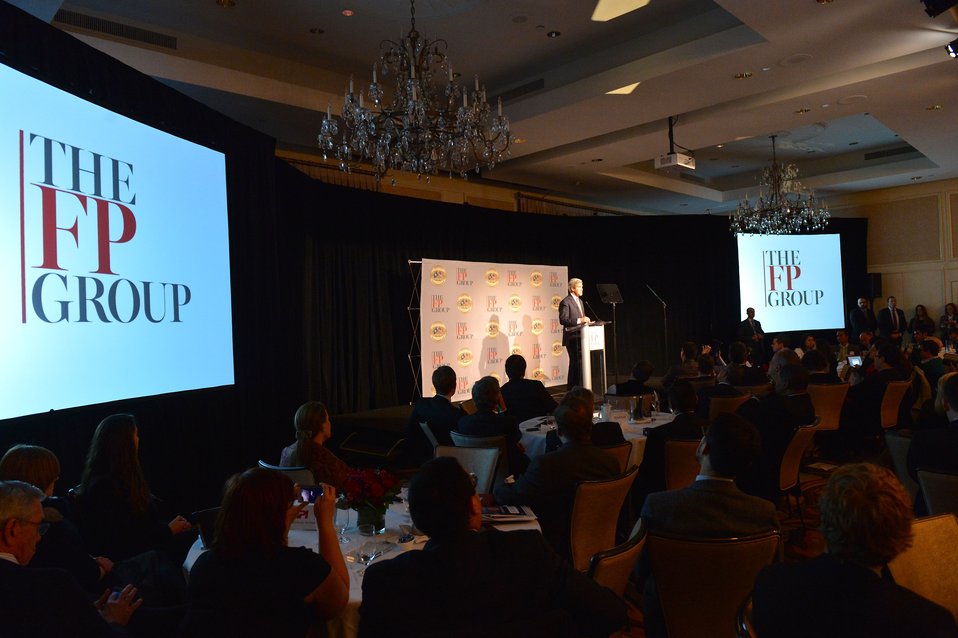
Secretary Kerry Delivers Remarks at the Transformational Trends Strategic Forum

U.S. Secretary of State John Kerry delivers remarks at the Transformational Trends Strategic Forum in Washington, D.C., on December 11, 2013.